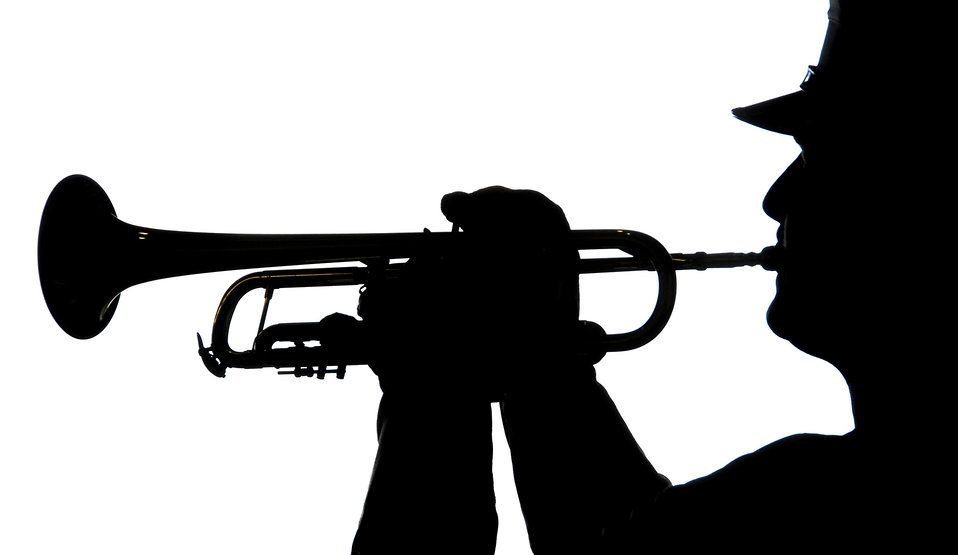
A sorrowful welcome

A servicemember plays Taps during a Joint POW/MIA Accounting Command homecoming ceremony Sept. 26 at Hickam Air Force Base, Hawaii. The ceremony was for U.S. servicemembers that were recovered in Vietnam, Laos and the Soloman Islands by teams from JPAC.